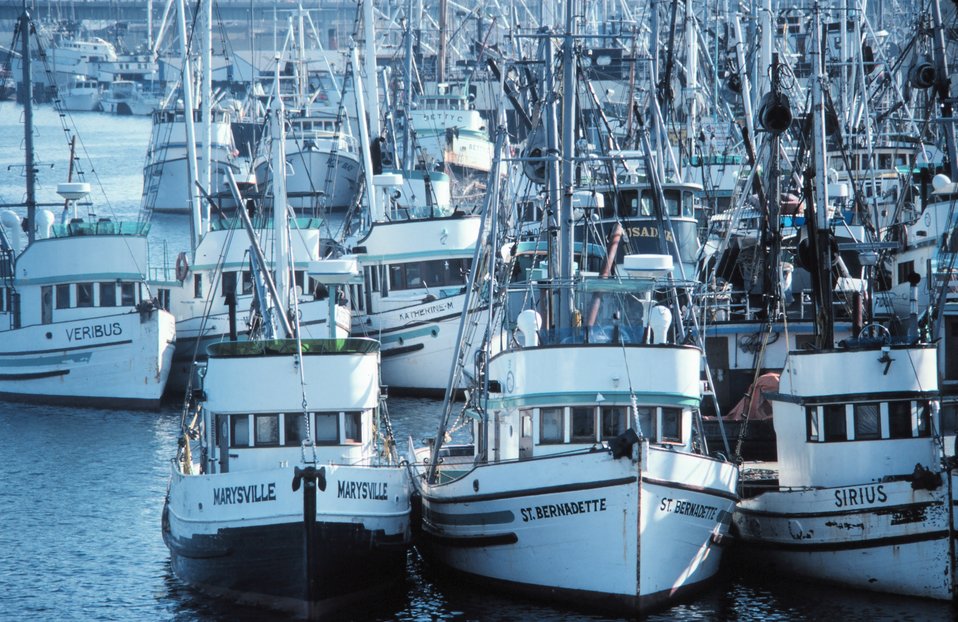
Fishing vessels tied up in Seattle